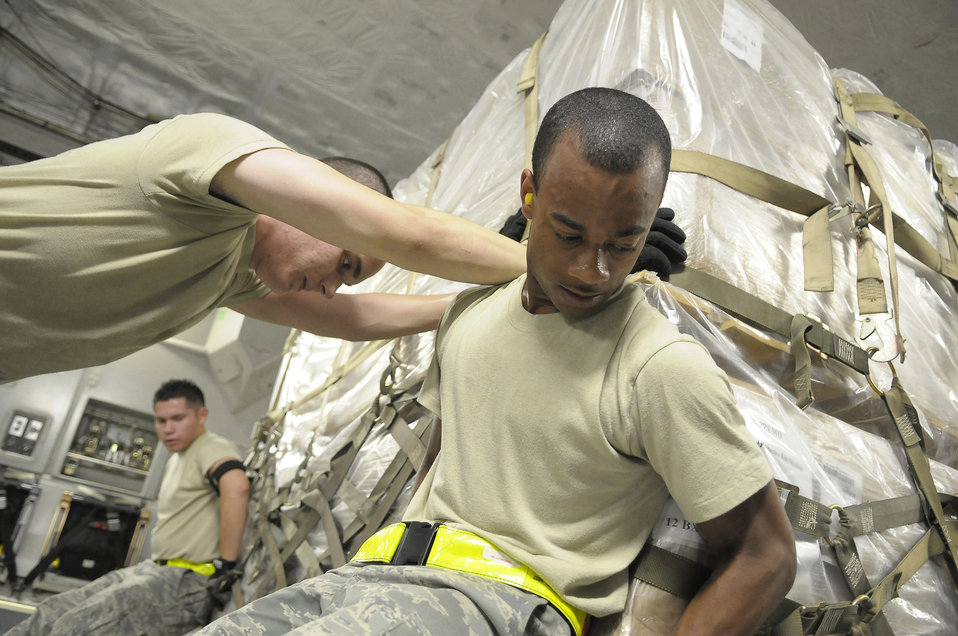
Airmen deliver 30,000 H1N1 prevention kits to South America

Airman 1st Class Marvin Richardson, front, Airman 1st Class Daniel Anderson, center, and Airman Rodrigo Maranon, back, push a pallet of personal protection kits onto a C-17 May 8 at Charleston Air Force Base, S.C. The personal protection kits were shipped to Haiti, El Salvador, Guatemala, Honduras and Nicaragua, where health-care officials are responding to confirmed and suspected cases of H1N1 Influenza-A infections. U.S. Southern Command, with headquarters in Miami, directed the mission after learning health officials submitted requests for assistance to U.S. embassies in their respective countries. Airmen Richardson, Anderson and Maranon are air transportation specialists with 437th Aerial Port Squadron at Charleston AFB.